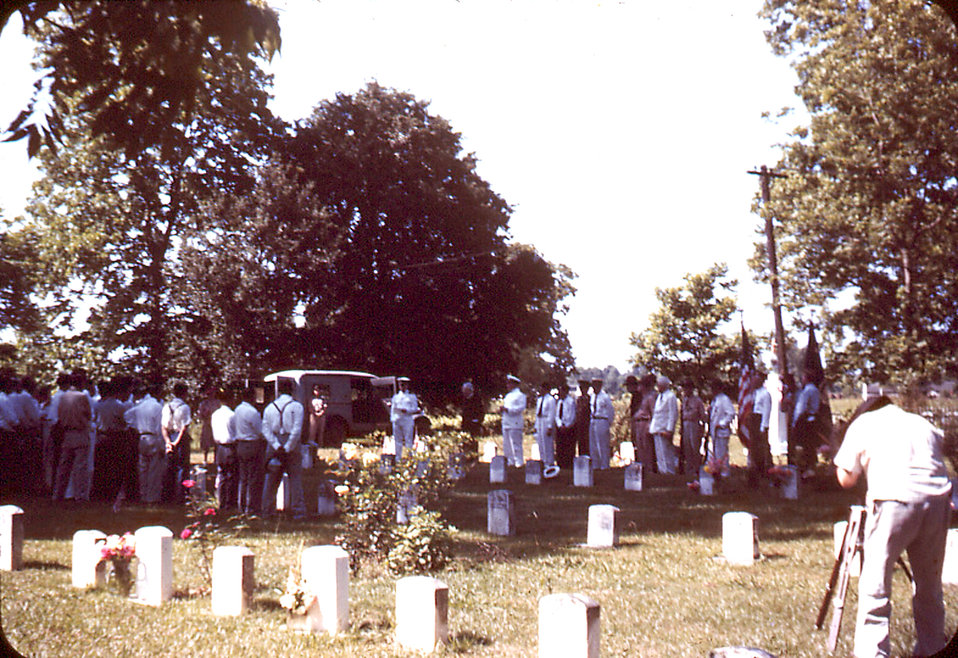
This historic image depicted a funeral on the grounds of the Carville, Louisiana Leprosarium, in honor of Sister Zoe, the only member of the Sisters of Charity who'd wanted to be buried in the same cemetery amongst those for whom she'd cared while they were patients at the facility. This graveyard was located on the grounds of the hospital. Currently there are 21 Sisters on staff. The first group of four Sisters of the order founded by St. Vincent de Paul, and officially named Daughters of Charity, arrived at Carville, April 27, 1896, with Sister Beatrice Hart in charge. The sisters volunteered their services, in order to nurse the sufferers of leprosy who'd sought help at the leprosarium. Between 1894 and 1922, there were 125 patient deaths, all of whom were buried on the grounds of the leprosarium. The hospital was a self-contained compound with its own storehouse, laundry, food-processing facilities, patient treatment centers, recreational facilities, and cemetery.